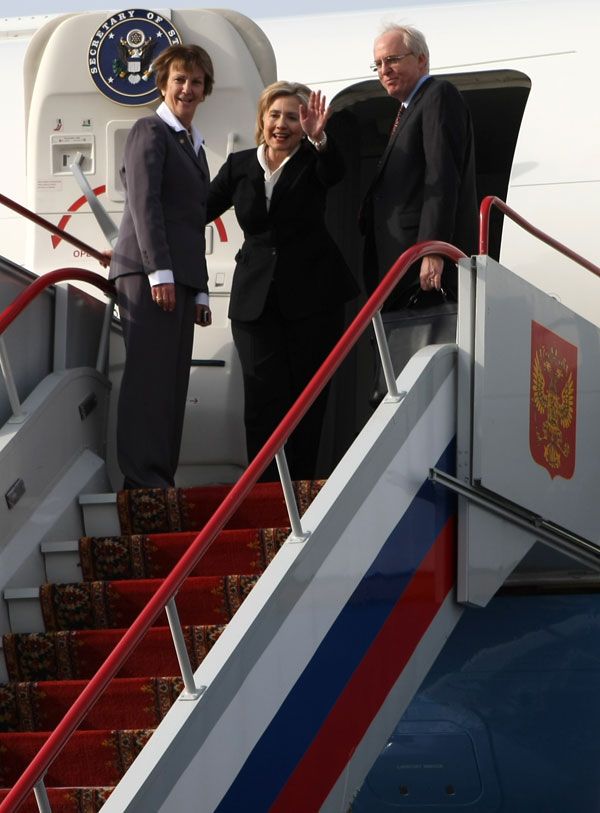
Secretary Clinton Waves Goodbye to Moscow

U.S. Secretary of State Hillary Rodham Clinton waves goodbye to Moscow with POL Section Chief Susan Elliott and Ambassador Beyrle before heading to Kazan, Russia, October 14, 2009.